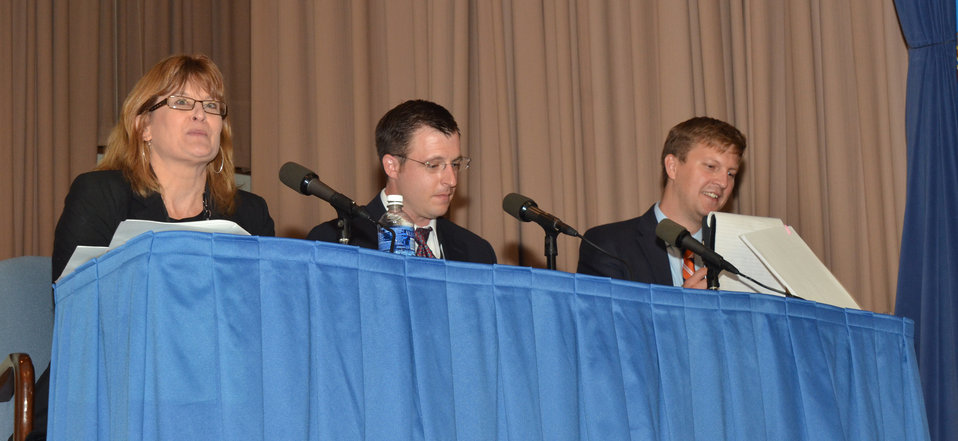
Panel members respond to audience questions at the U.S. Office of Government Ethics training Preventing Conflict of Interest in the Executive Branch at the Jefferson Auditorium at the U.S. Department of Agriculture (USDA) in Washington, D.C. on Wednesday, Aug. 21, 2013.